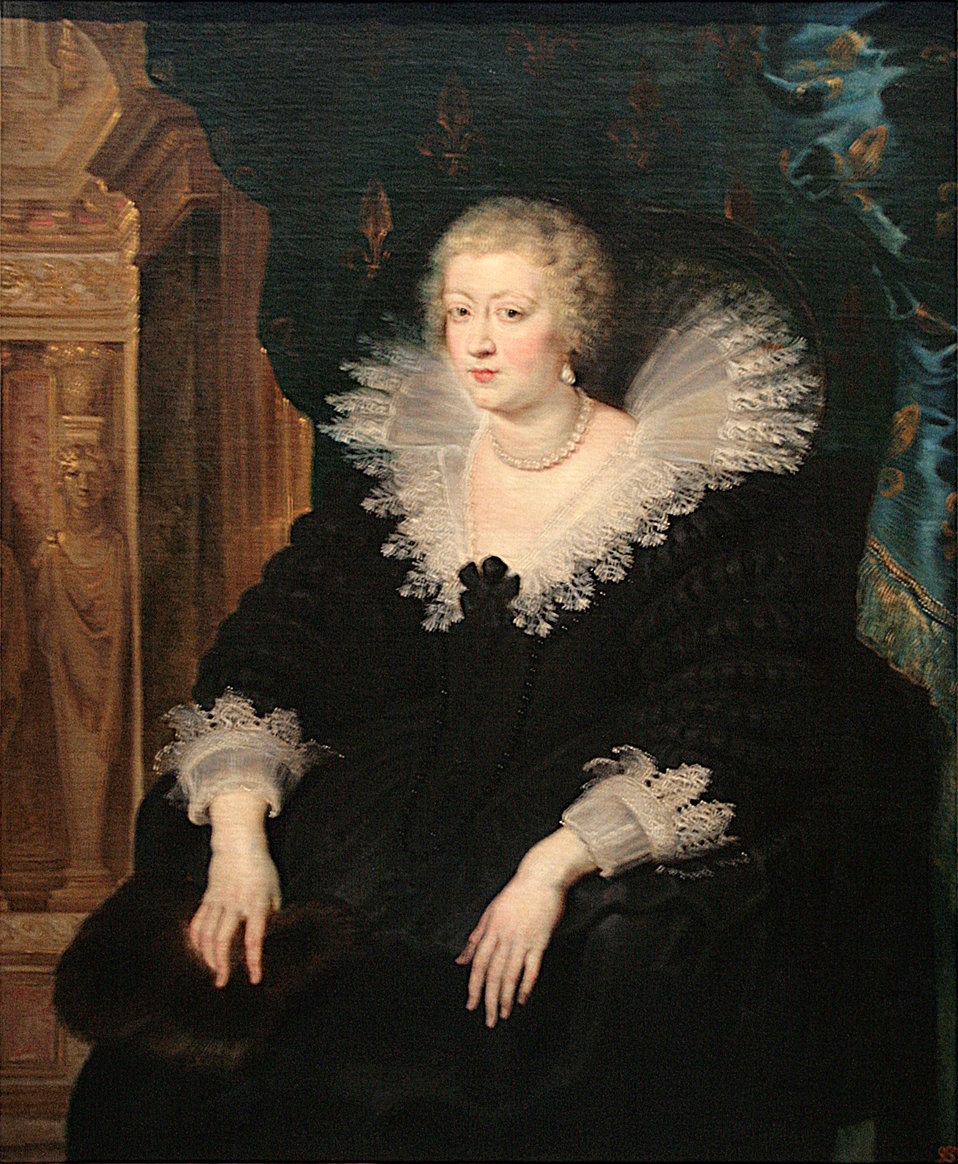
0 Anne d'Autriche, reine de France - PP. Rubens - Prado P01689